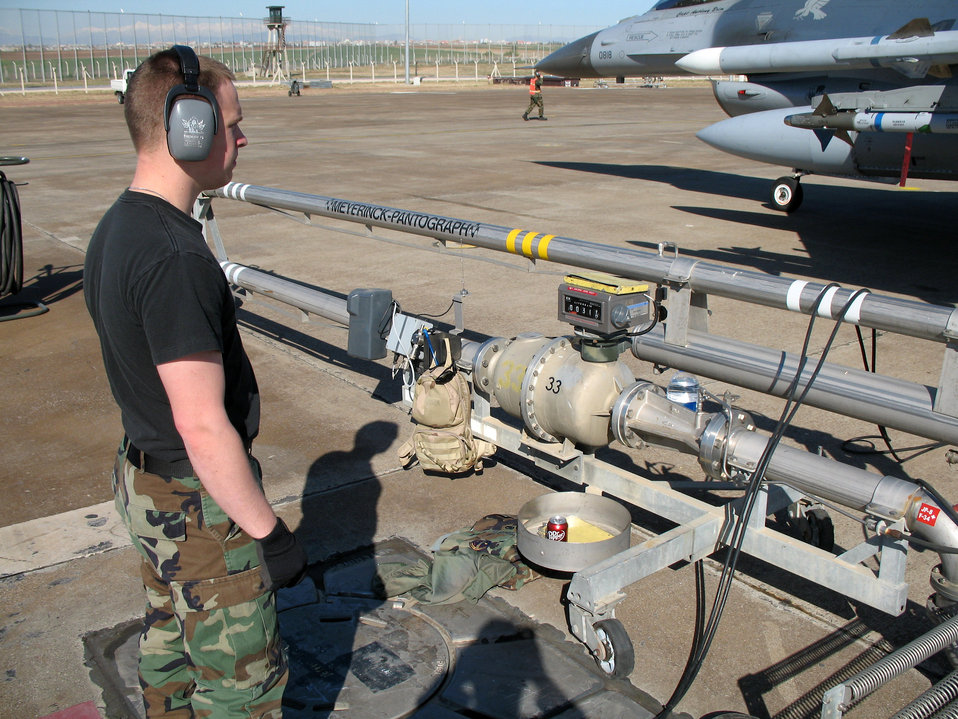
Fighter training in Turkey helps more than just pilots

Senior Airmen Blake Mellom keeps track of how much fuel is going into an F-16 Fighting Falcon as he refuels the aircraft Feb. 7 at Incirlik Air Base, Turkey. Airman Mellom is deployed from the 52nd Logistical Readiness Squadron at Spangdahlem AB, Germany.